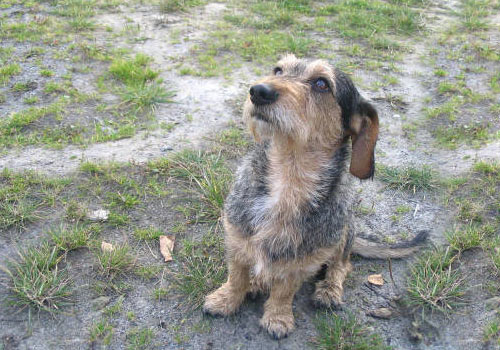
Polski: Jamnik Szorstkowłosy Wirehaired Dachshund